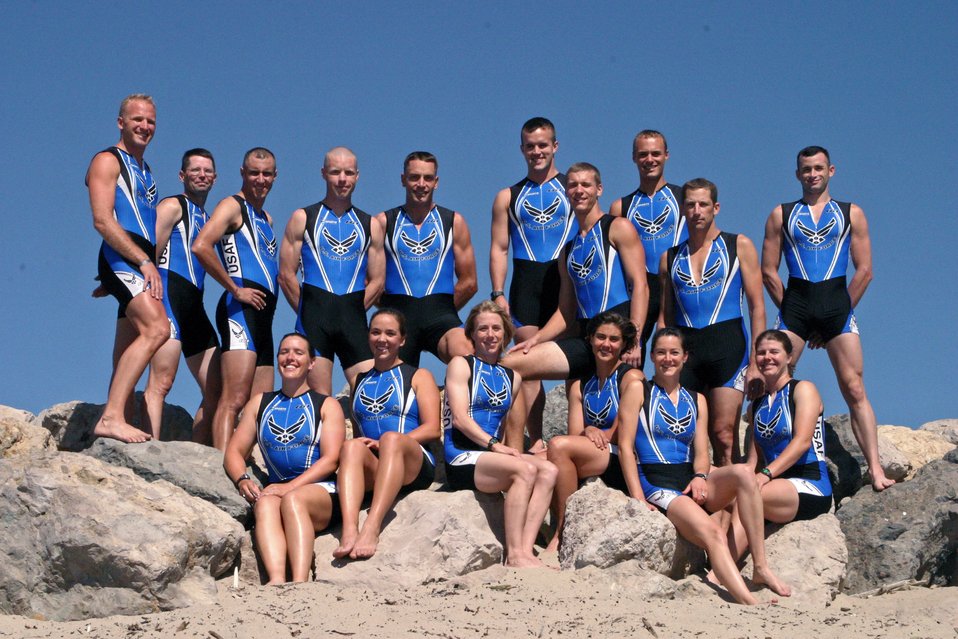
2007 Armed Forces Triathlon Championship

The Air Force triathlon team poses for a team photo before heading to the 2007 Armed Forces Triathlon Championship at Naval Base Ventura County-Point Mugu, Calif., July 28.